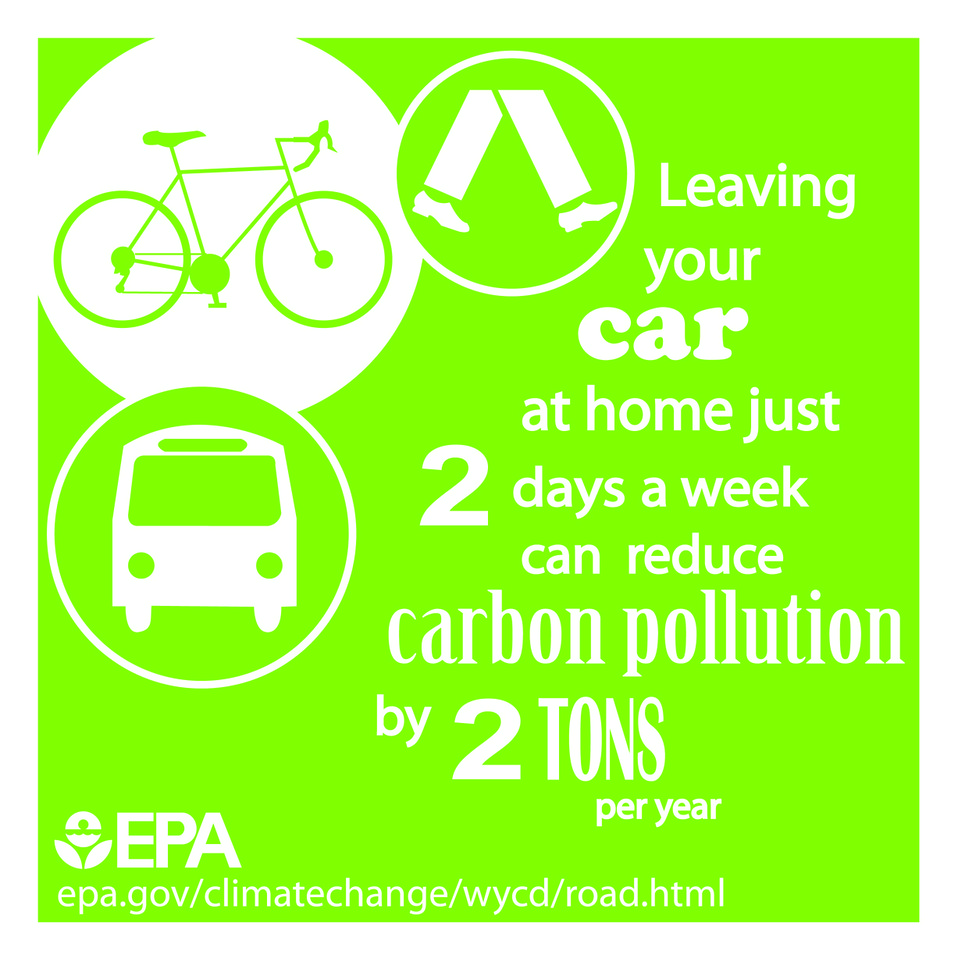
Leave Your Car at Home

Driving your car releases greenhouse gases into the atmosphere and contributes to climate change - but you can take easy steps to cut your emissions and save money.